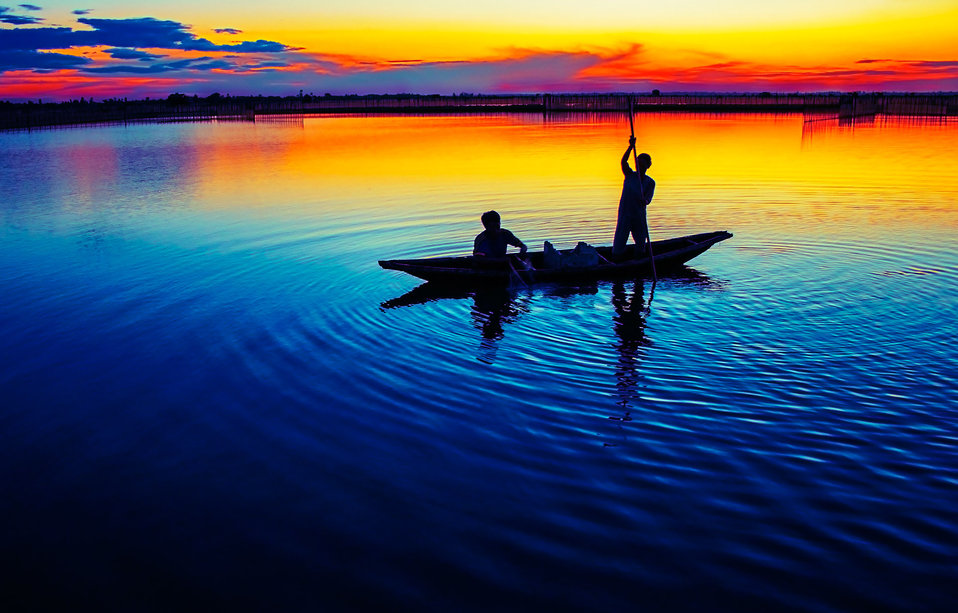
Working in dawn

A couple of fishermen are fishing in a lagoon in hue province, vietnam..